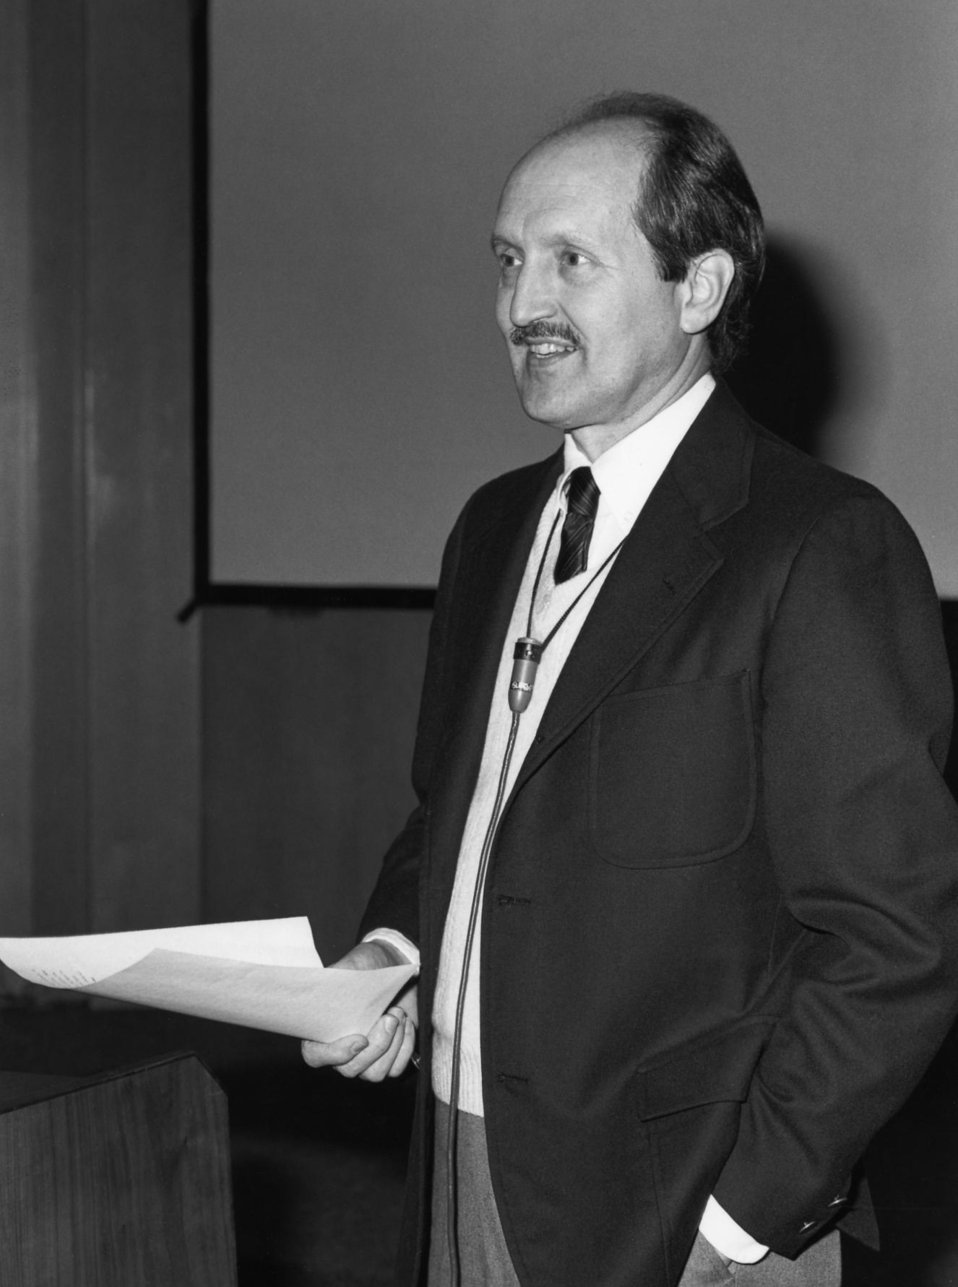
This photograph depicted Gary R. Noble, M.D., M.P.H., who spent 29 years at the Centers for Disease Control after graduating from the Epidemic Intelligence Service program in 1965.